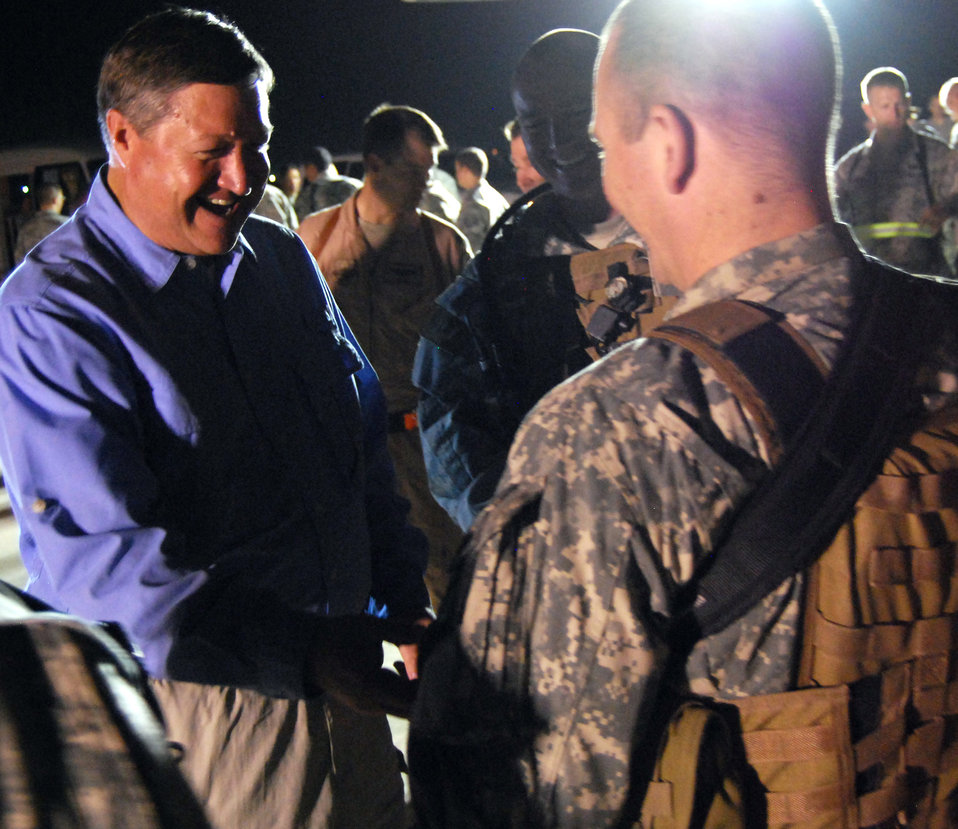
Secretary tours Joint Base Balad, shares Air Force vision

Secretary of the Air Force Michael B. Donley speaks with pararescue jumpers attached to the 66th Expeditionary Rescue Squadron during a visit to the combat search and rescue ramp Oct. 13 at Joint Base Balad, Iraq. The pararescuemen are deployed from Patrick Air Force Base, Fla.